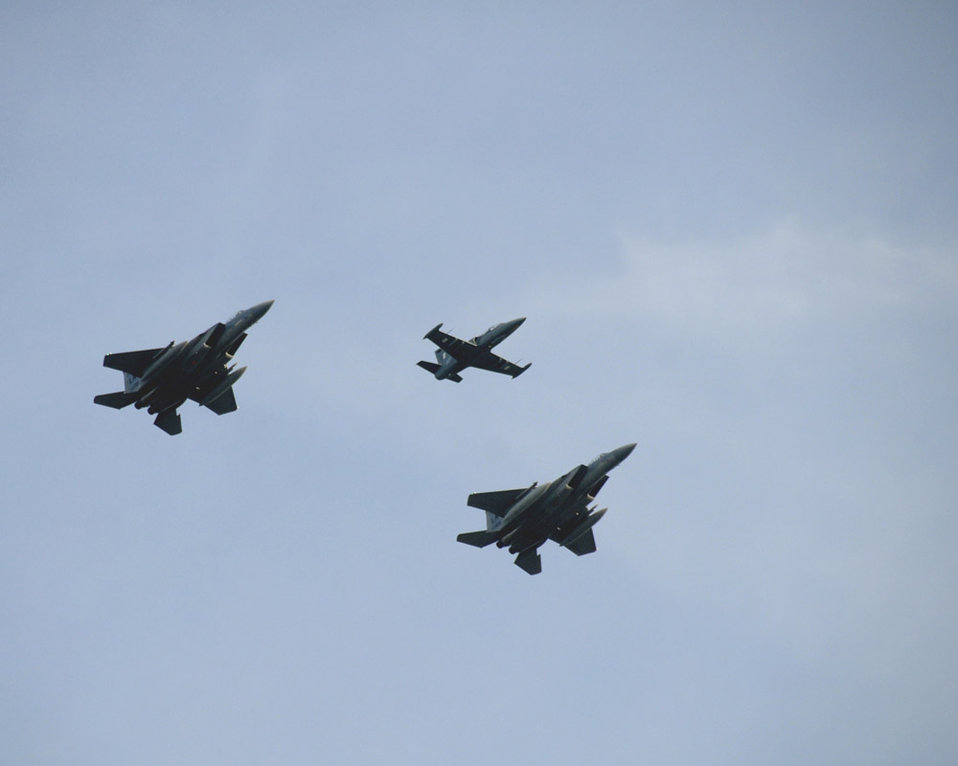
Readiness paramount in Baltic air policing mission

Two F-15 Eagles soar with a Lithuanian air force L-39 Albatross during an exercise intercept Nov. 11 over Siauliai, Lithuania. The F-15s are supporting the NATO Baltic air policing mission.